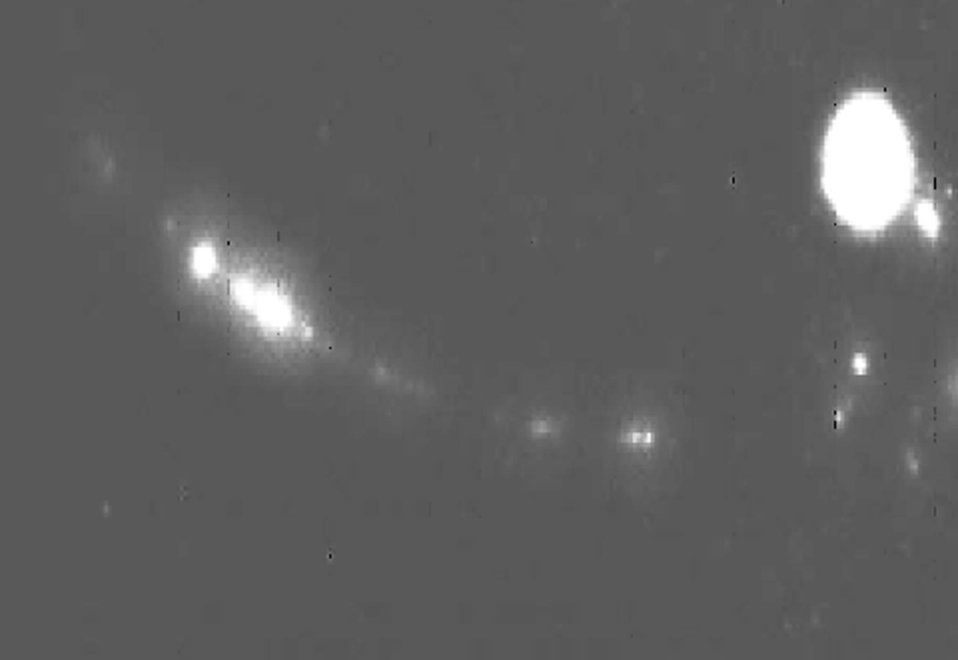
New Fabrication Technique Yields Nanoscale UV LEDs

Optical image of the same nanowire in action. Most of the light emitted from the device is in the ultraviolet portion of the spectrum, but enough visible light is generated to see it glowing.